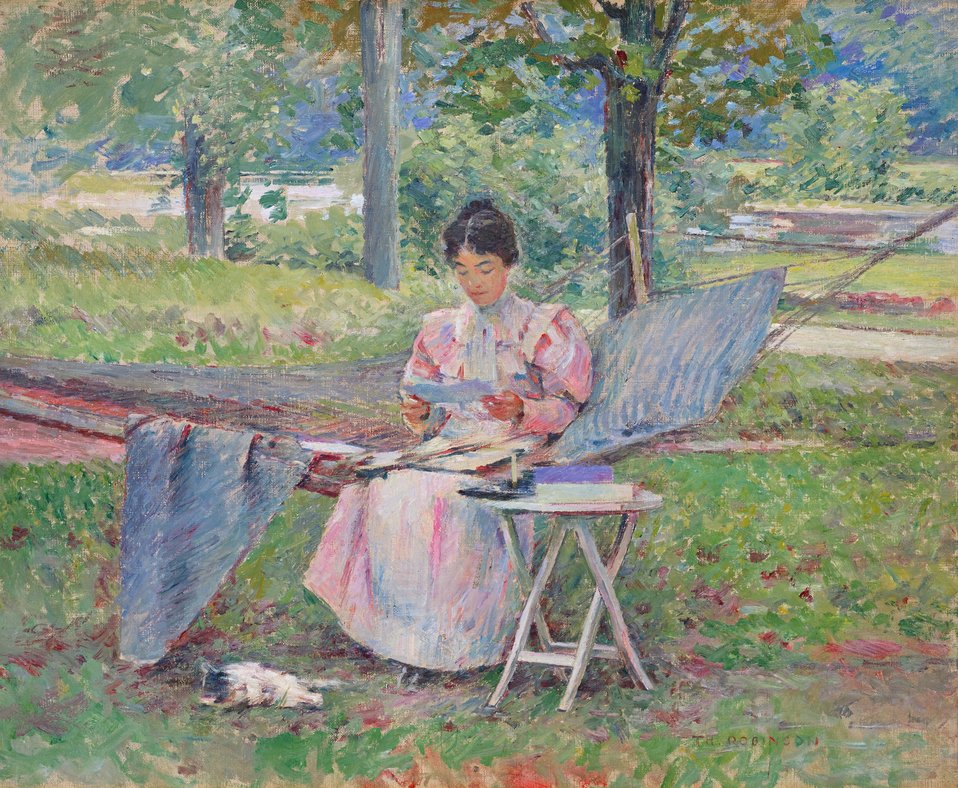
Correspondence by Theodore Robinson, oil on canvas, 18 by 22 inches (45.7 by 55.9 cm), 1895